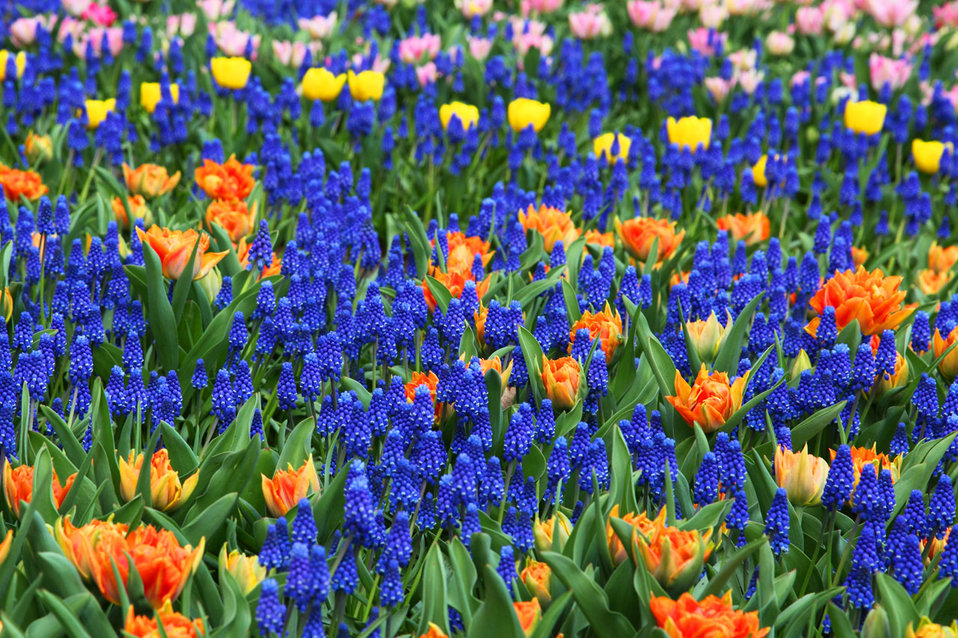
Colorful flower background image in keukenhof gardens.